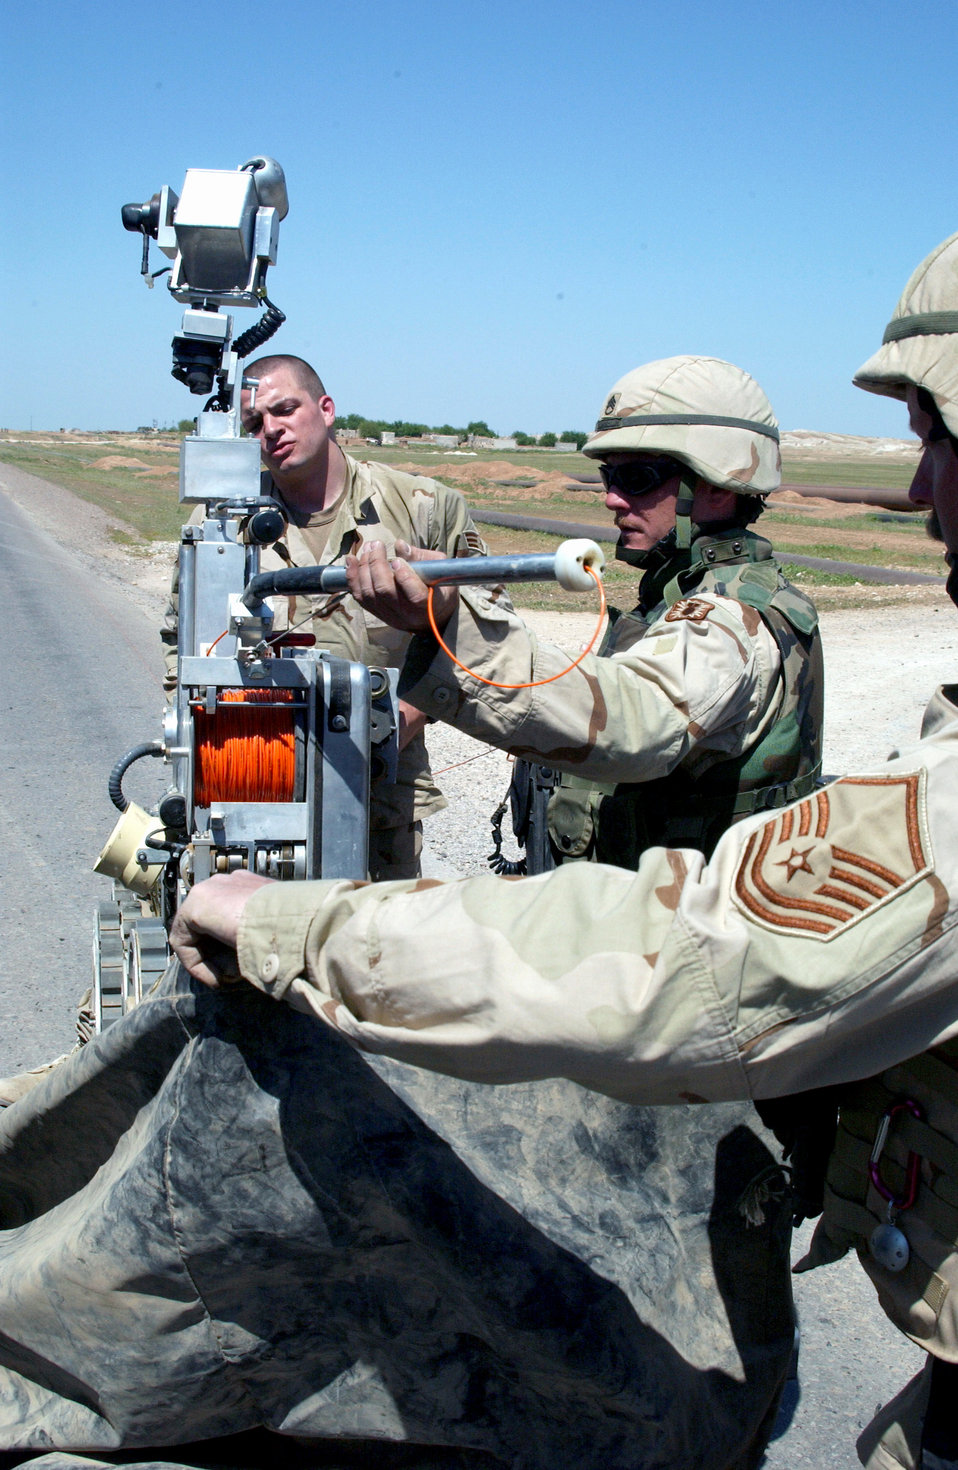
Bomb disposal robot

KIRKUK AIR BASE, Iraq - Several explosive ordnance disposal specialists stow a MK-VI bomb disposal robot after destroying an assortment of munitions found in the town of Dibbis, Iraq, April 9. The Airmen are assigned to the 506th Expeditionary Civil Engineer Squadron here.